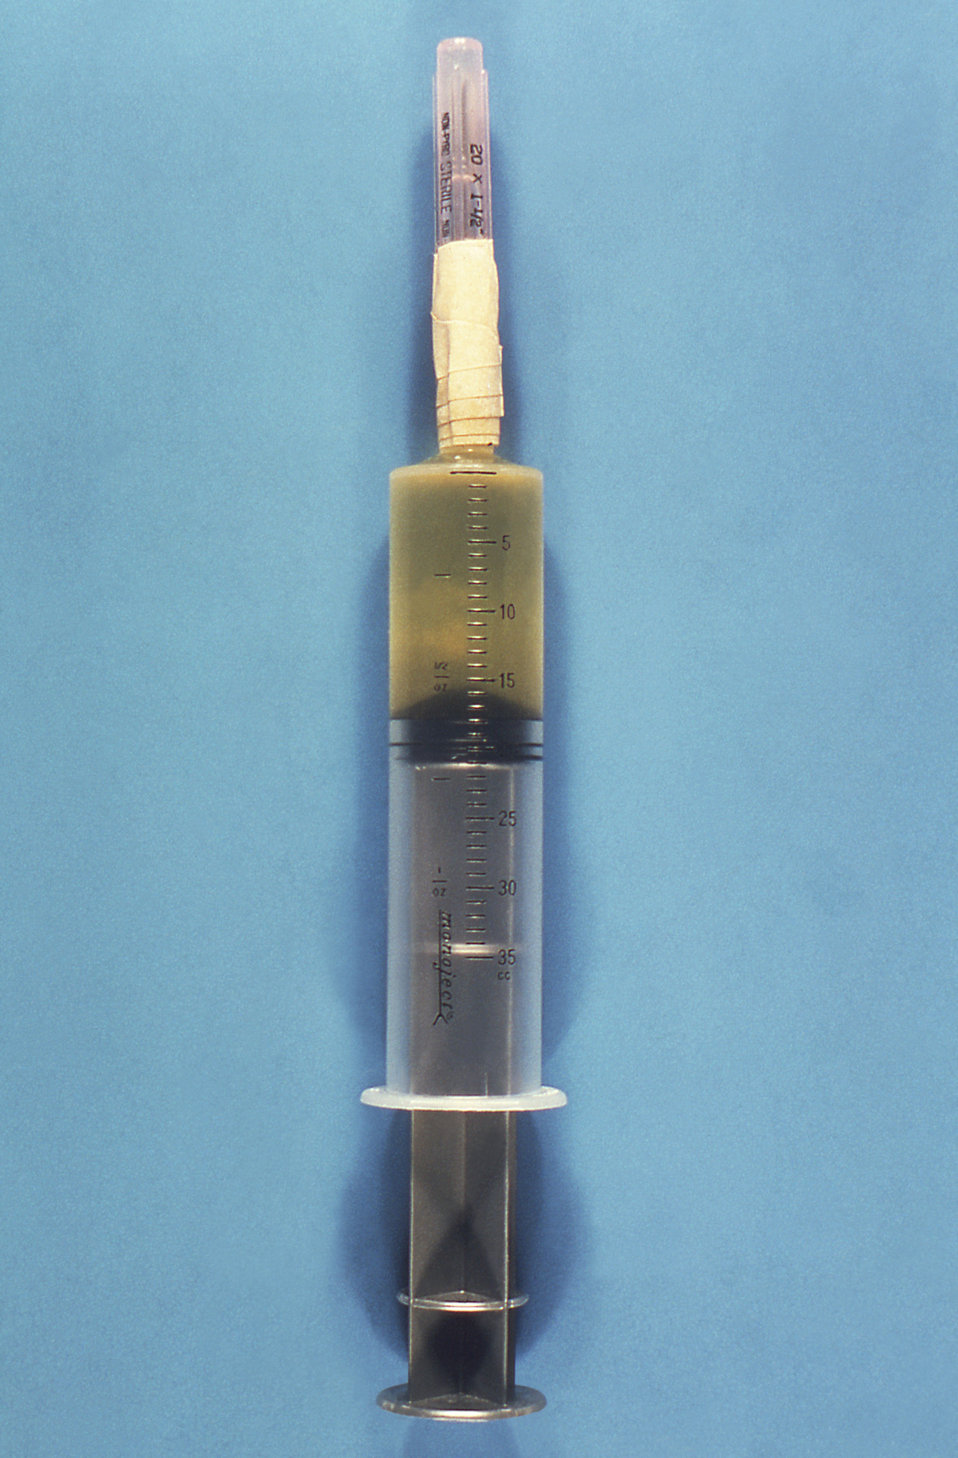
This image depicts a 35ml syringe containing amniotic fluid.